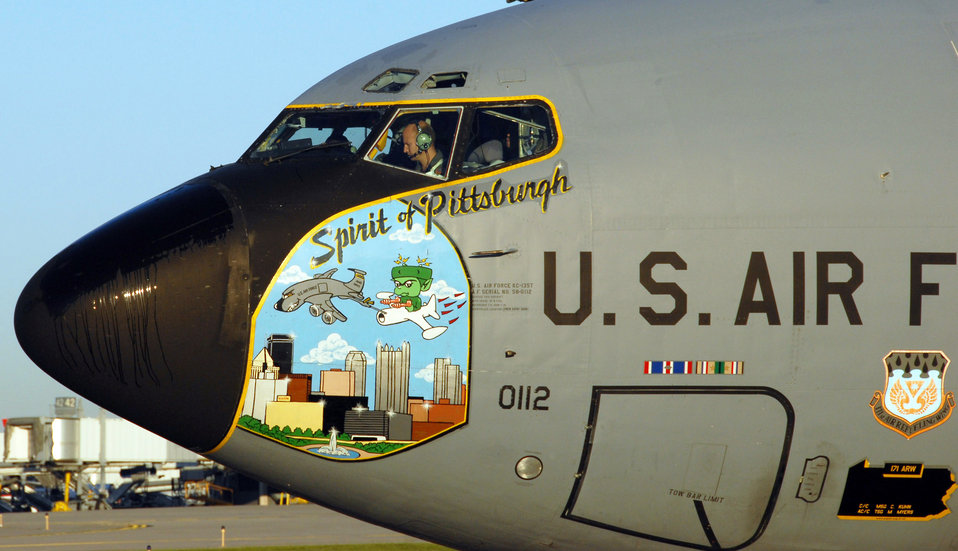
Spirit of Pittsburgh

A KC-135 Stratotanker prepares to takeoff Oct. 23 at the Pittsburgh International Airport, Penn. The aircraft is assigned to the Pennsylvania Air National Guard's 171st Air Refueling Wing.